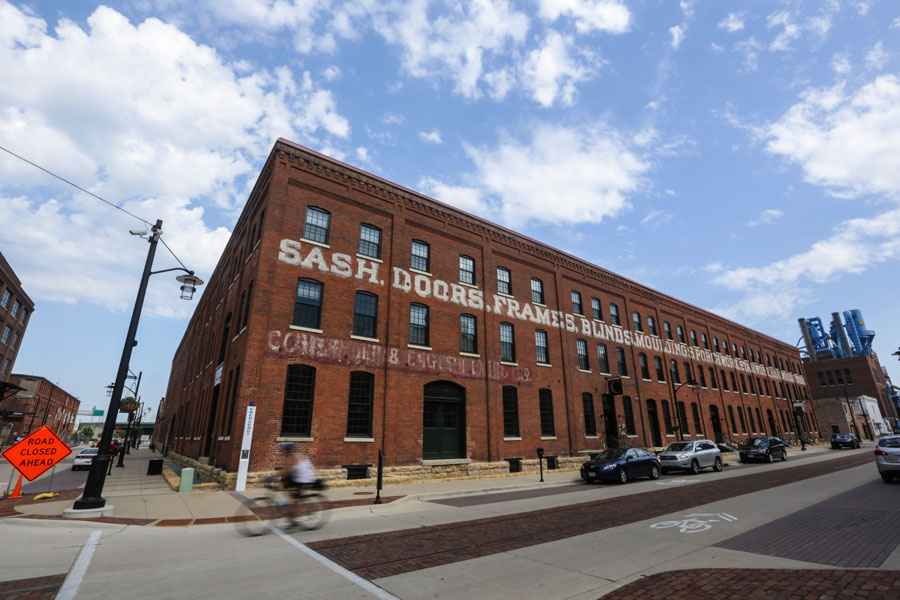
Dubuque building-exterior

The old Caradco factory, located in Dubuque’s Millwork District, was rehabilitated to include affordable and market-rate apartments, retail space for small businesses, art studios, and many nonprofits. The Millwork District and Washington Neighborhood are winners of EPA’s 2013 National Award for Smart Growth Achievement in the category of Corridor or Neighborhood Revitalization. The award is given annually for creative, sustainable initiatives that better protect the health and the environment of our communities while strengthening local economies. In 2013, EPA recognized innovative projects in seven communities.